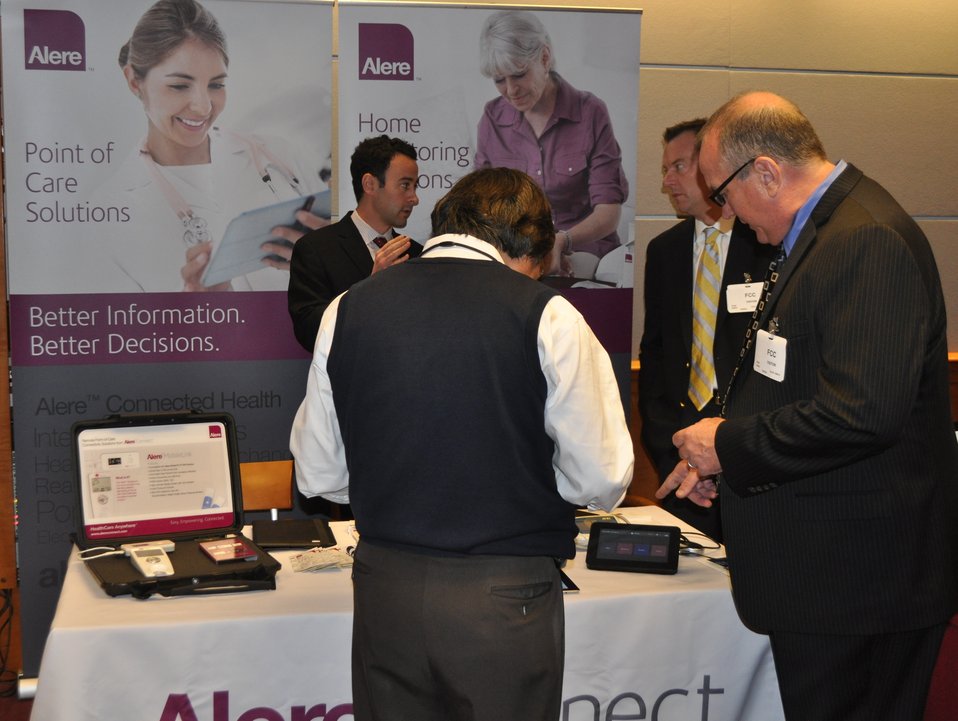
12.6.13 mHealth Innovation Expo

FCC mHealth Innovation Expo.